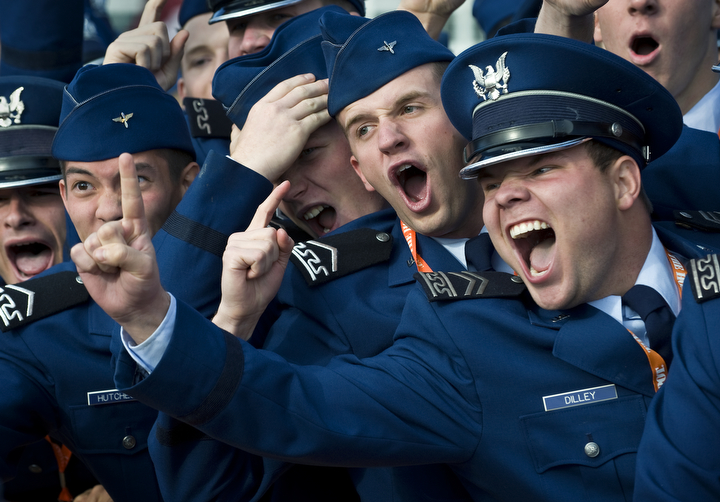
ESPN films 'College GameDay' from Academy

Cadets from the U.S. Air Force Academy cheer for their school during a broadcast of ESPN's